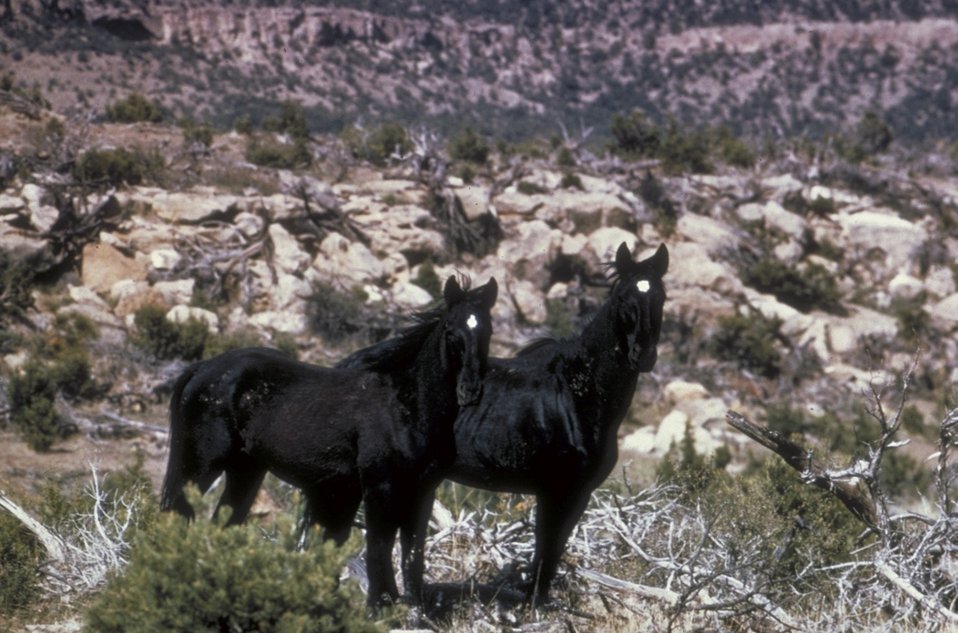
Wild Horses out on the range.